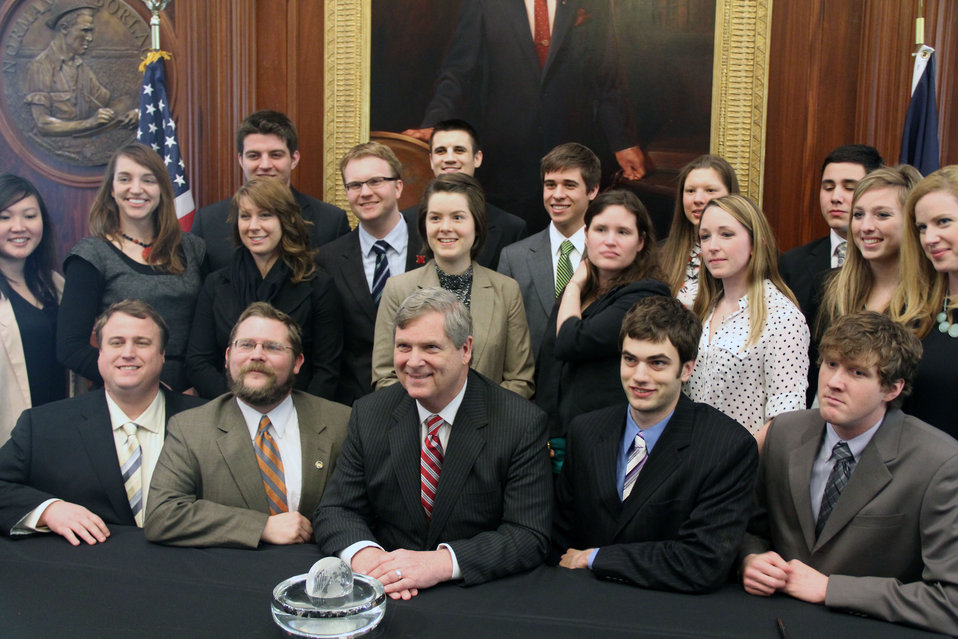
Agriculture Secretary Vilsack and World Food Prize Foundation Cement Agriculture Secretary Vilsack and World Food Prize Foundation Cement Agriculture with the Partnership to Support the U.S. Department of Agriculture (USDA's) Wallace-Carver Internship Program, in Des Moines, Iowa, on February 19, 2013.